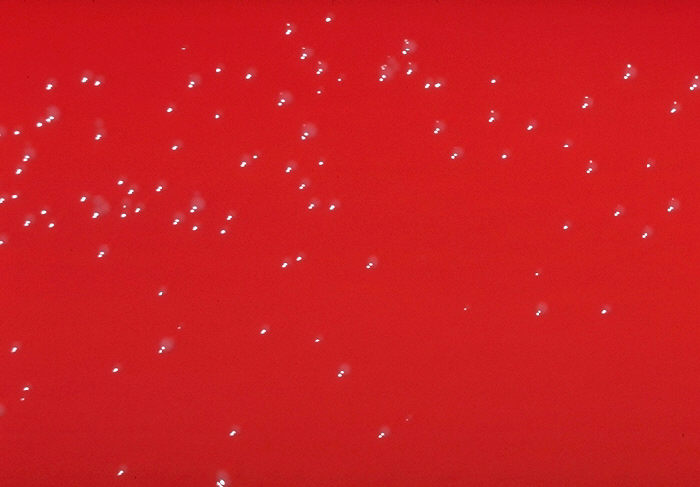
Blood agar plate culture of Haemophilus aphrophilus.